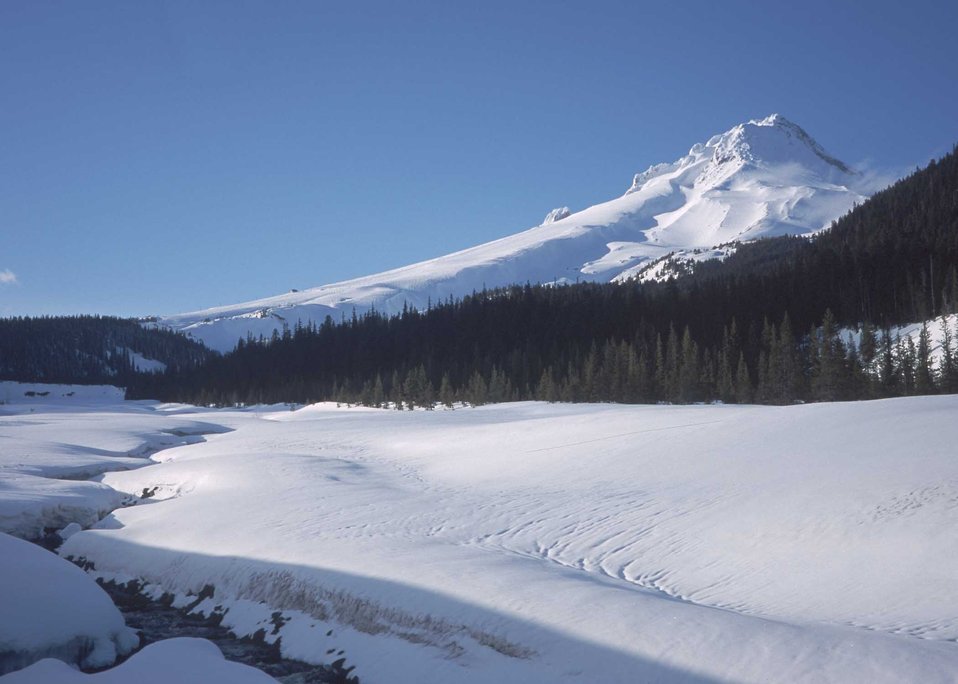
A winter landscape of Mt. Hood

A winter scenic view of Mt. Hood, Oregon with a mountain stream.